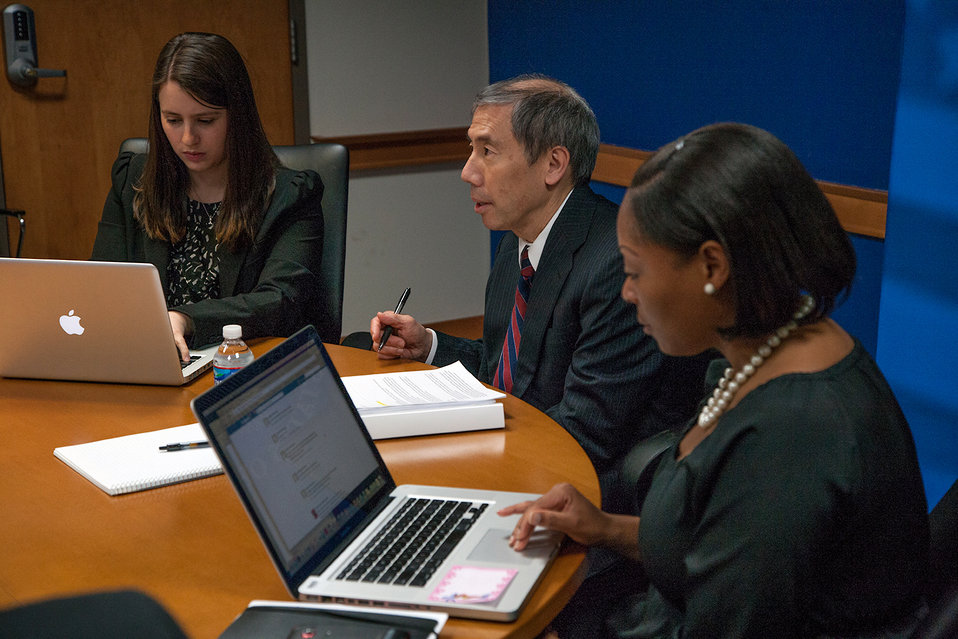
Acting Assistant Secretary Yamamoto Participates in a Facebook Chat

Acting Assistant Secretary of State for African Affairs Donald Yamamoto participates in a Facebook chat on U.S. foreign policy and Africa at the U.S. Department of State in Washington, D.C., on April 25, 2013.